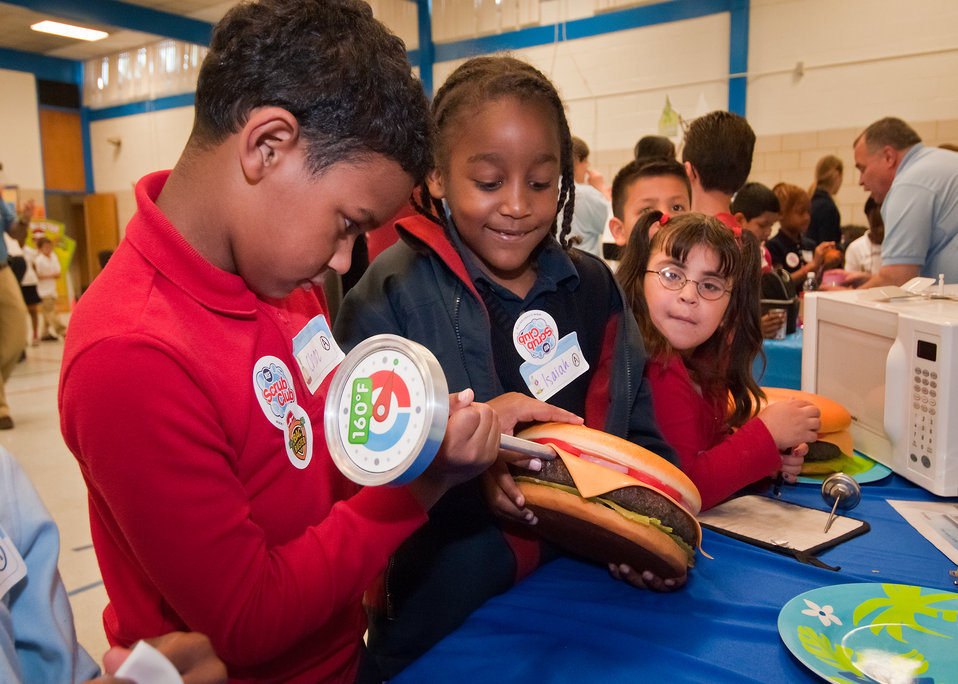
Chaz Clark (left), Isiah Barr (center) and Nancy Teo Quintana (right) students from Ms. Lindsay Gormus’s first grade class at Maryland City Elementary School in Laurel, MD, learn the correct temperature to cook hamburgers at the United States Department of Agriculture, Food Safety Inspection Service, Food Safety Education Camp held at Maryland City Elementary, on Thursday, May 5, 2011.